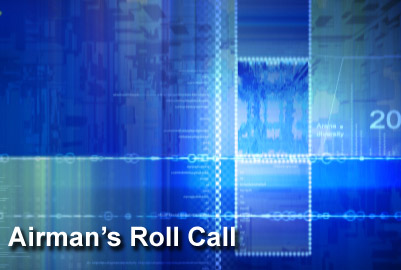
Airman's Roll Call: PCS policy changes

This week's Airman's Roll Call discusses two permanent change of station policy modifications that give Airmen more flexible assignment options.